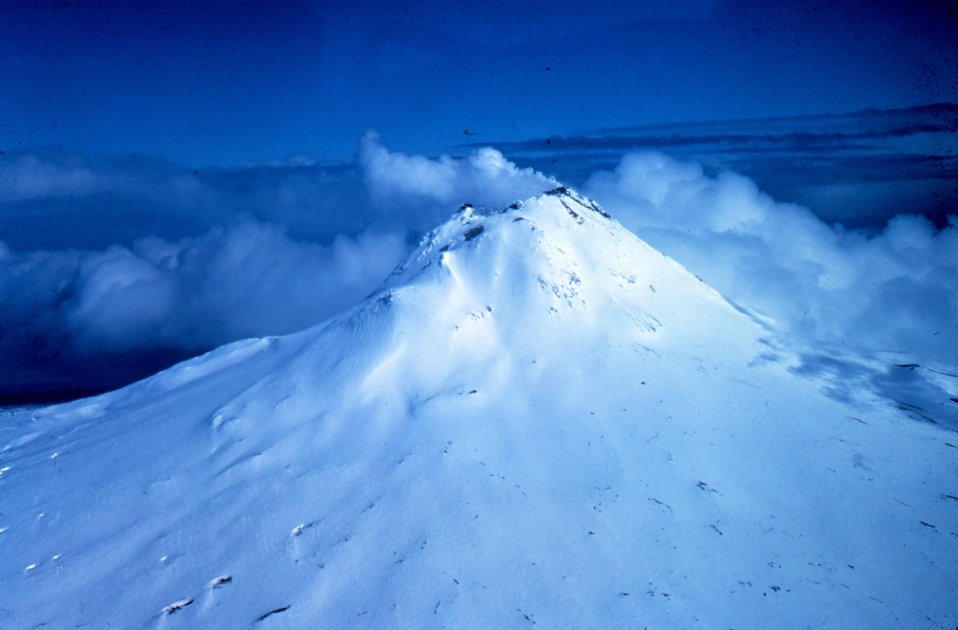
Augustine Volcano.